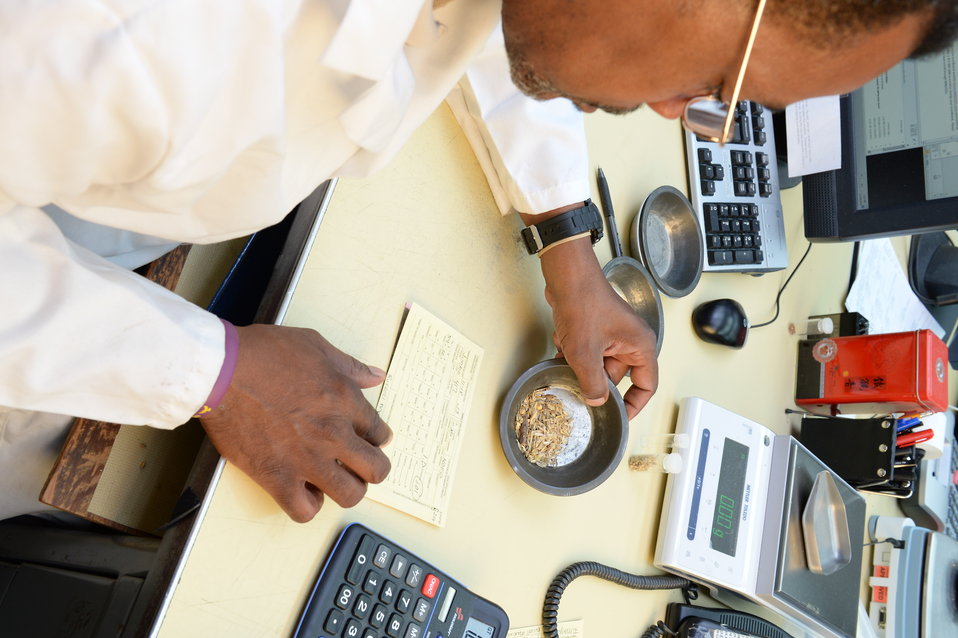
A U.S. Department of Agriculture (USDA) Grain Inspection, Packers and Stockyards Administration (GIPSA) Federal Grain Inspection Service (FGIS) scientist tests wheat at the FGIS inspection laboratory in New Orleans, LA on Monday, Nov. 18, 2013.